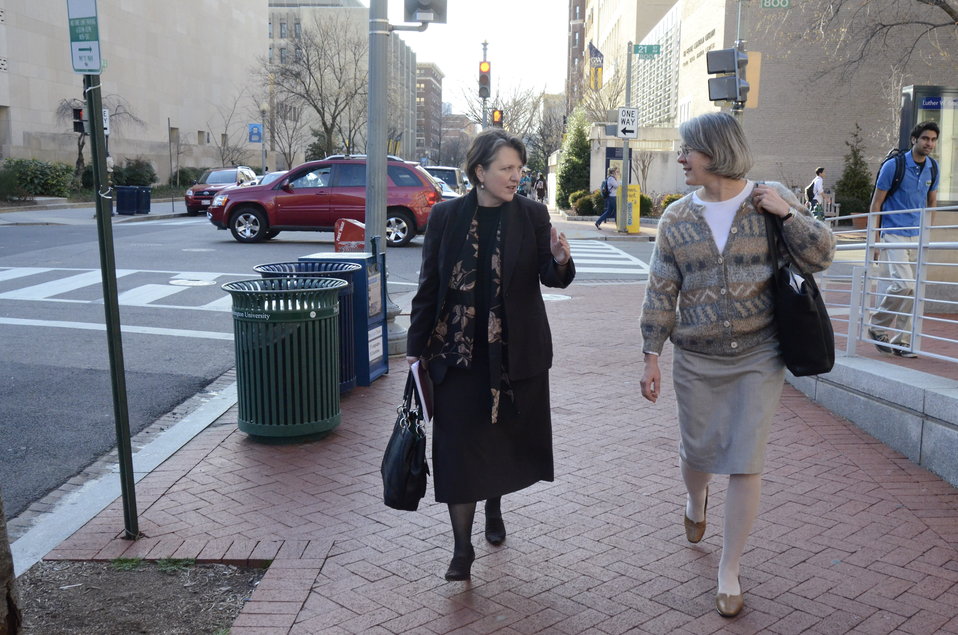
Agriculture Deputy Secretary Dr. Kathleen Merrigan (left) talks to Margaret Krome as they walk on the George Washington Campus to participate in the 'Shaping the Farm Bill for a Sustainable Future.' Forum at The Trachtenberg School of Public Policy and Public Administration, George Washington University in Washington, D.C., on Thursday, March 1, 2012.